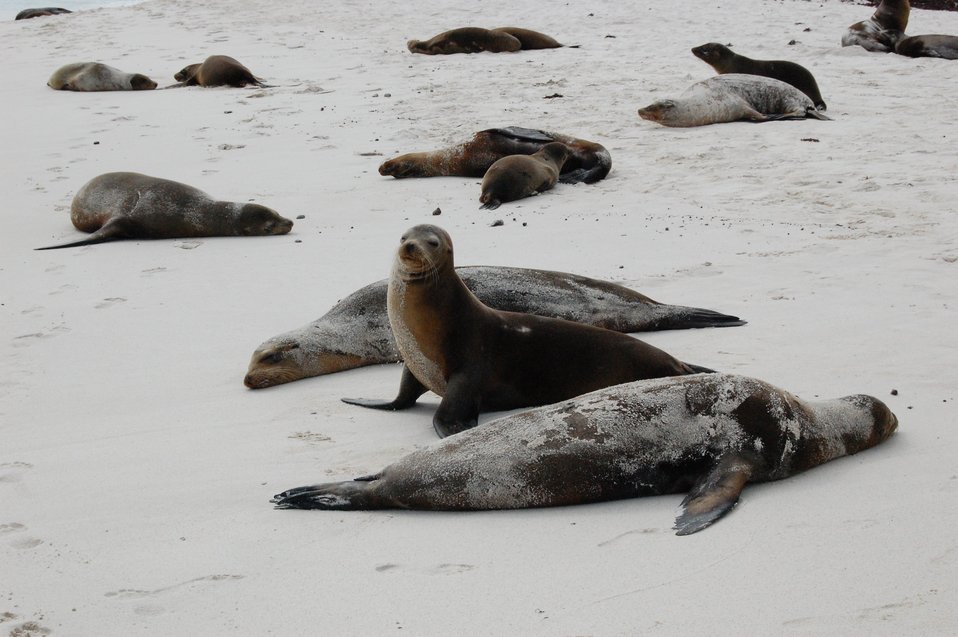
Sea lions hauled out on the beach.